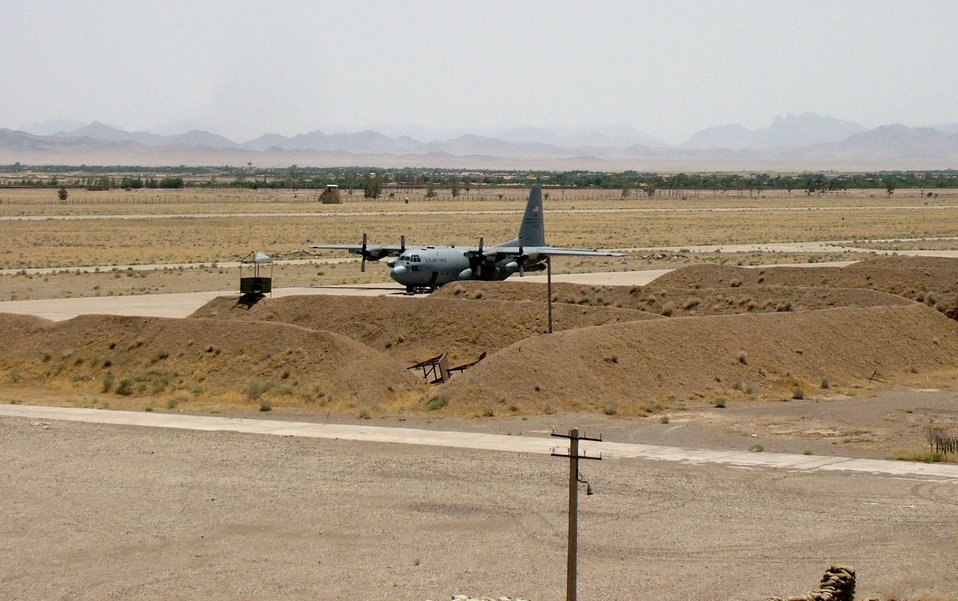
Airmen put C-130 back in the fight

A C-130 Hercules and its crew from the 746th Expeditionary Airlift Squadron landed at an abandoned air strip due to engine problems May 25 outside of Shindand, Afghansistan. Maintenance repair teams from Bagram Air Base, Afghanistan, and the 379th Air Expeditionary Wing from Southwest Asia arrived at the scene to swap out the engine and return the aircraft to service.